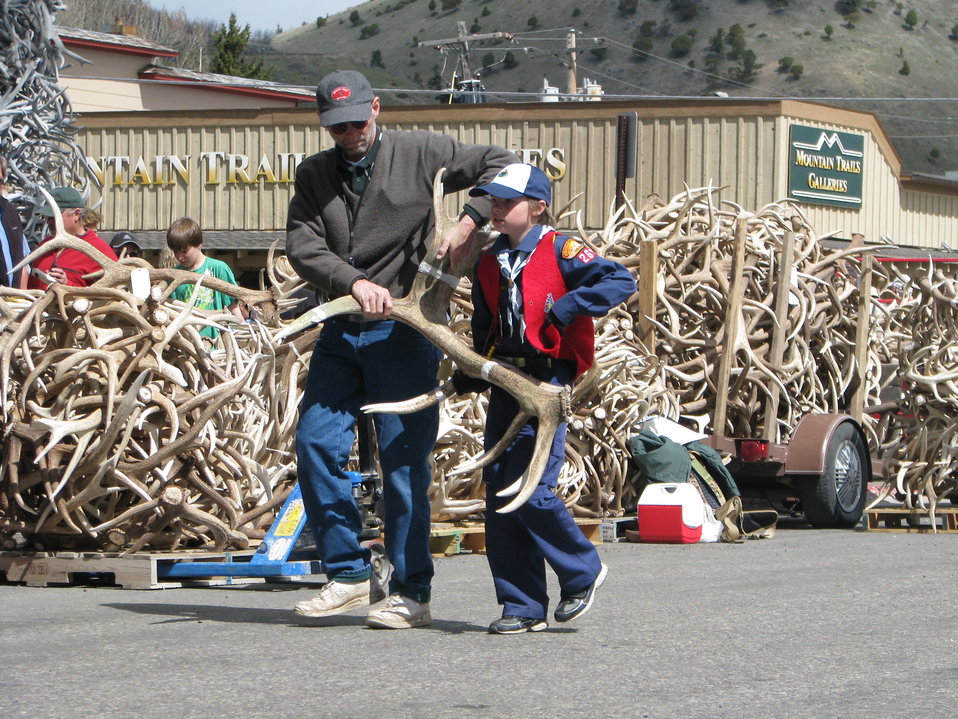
A Matched Pair to Sell

A Boy Scout carries a matched set of antlers toward the auction stage. Workers that prepare the antlers for the auction try to match sets of antlers whenever possible as they bring in a much larger price per pound.